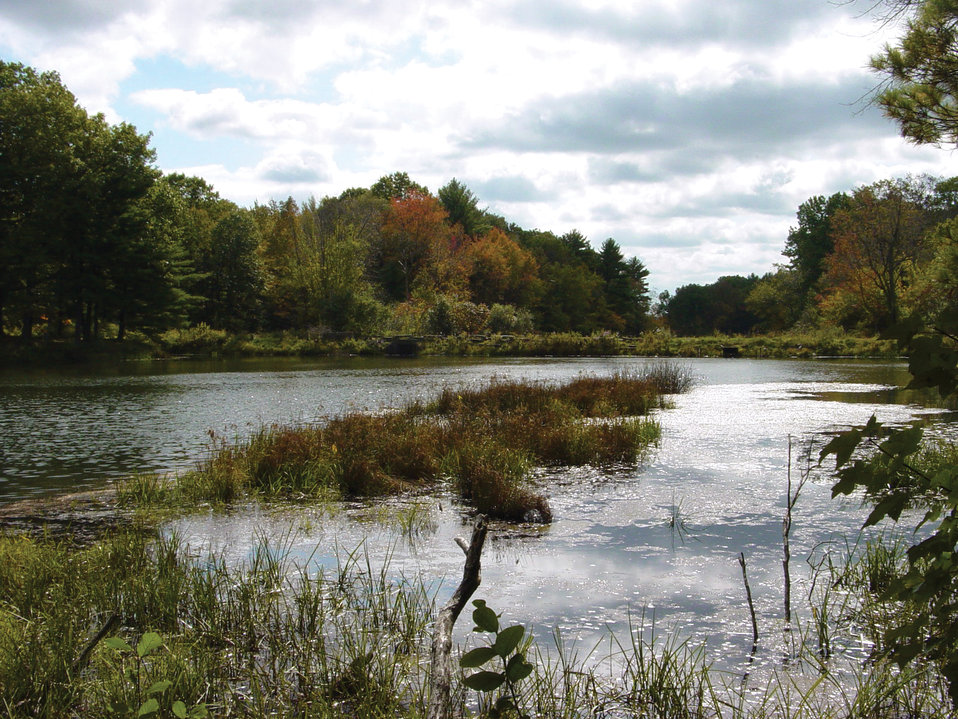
Photo of the Week - Peverly Pond (NH)

Photo of the Week - 11/14/11

Upper Peverly Pond at Great Bay National Wildlife Refuge in Newington, NH.